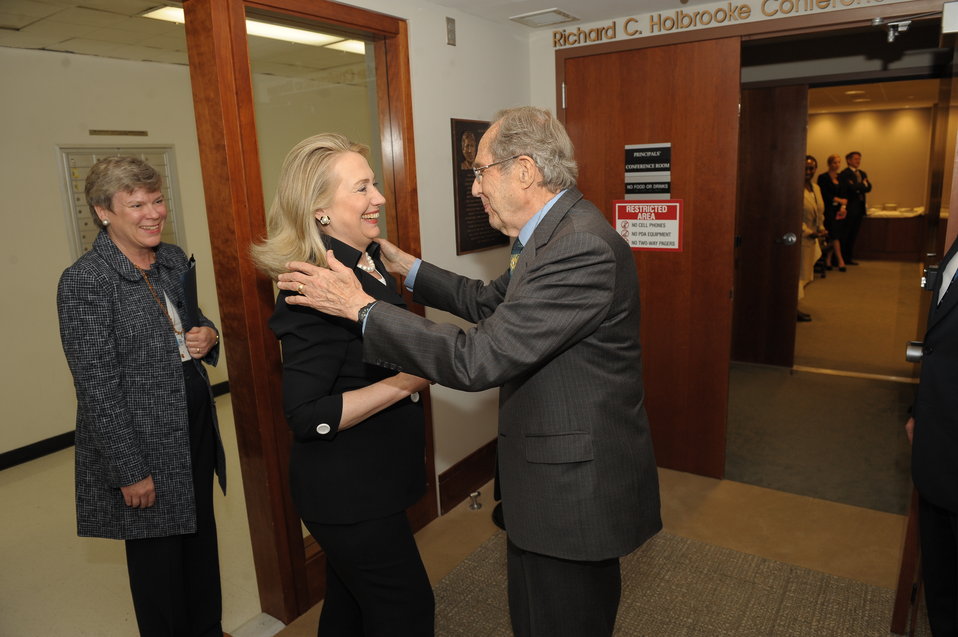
Secretary Perry Meets With Secretary Clinton

Former Secretary of Defense William Perry meets with Secretary of State Hillary Rodham Clinton before the meeting of the International Security Advisory Board (ISAB) at the U.S. Department of State in Washington, D.C., on May 24, 2012. Acting Under Secretary for Arms Control and International Security Rose Gottemoeller is also pictured.